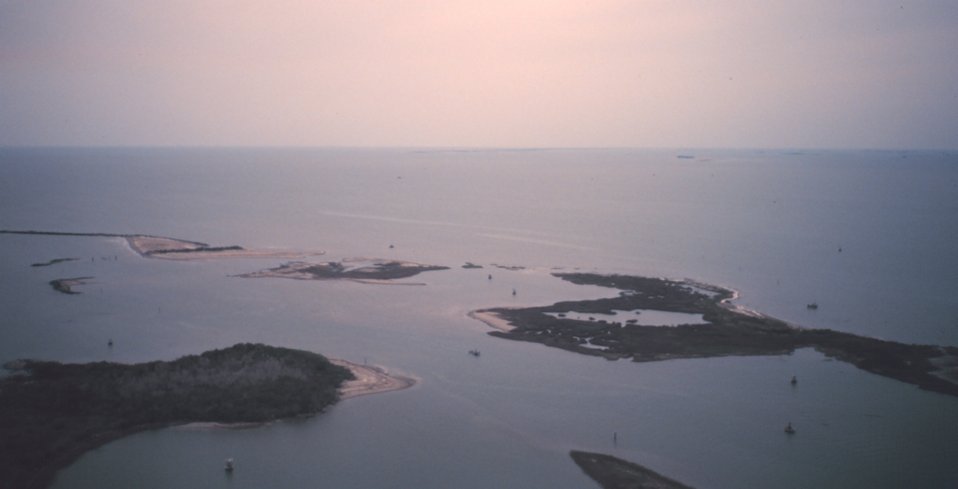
Islands north of East Timbalier Island